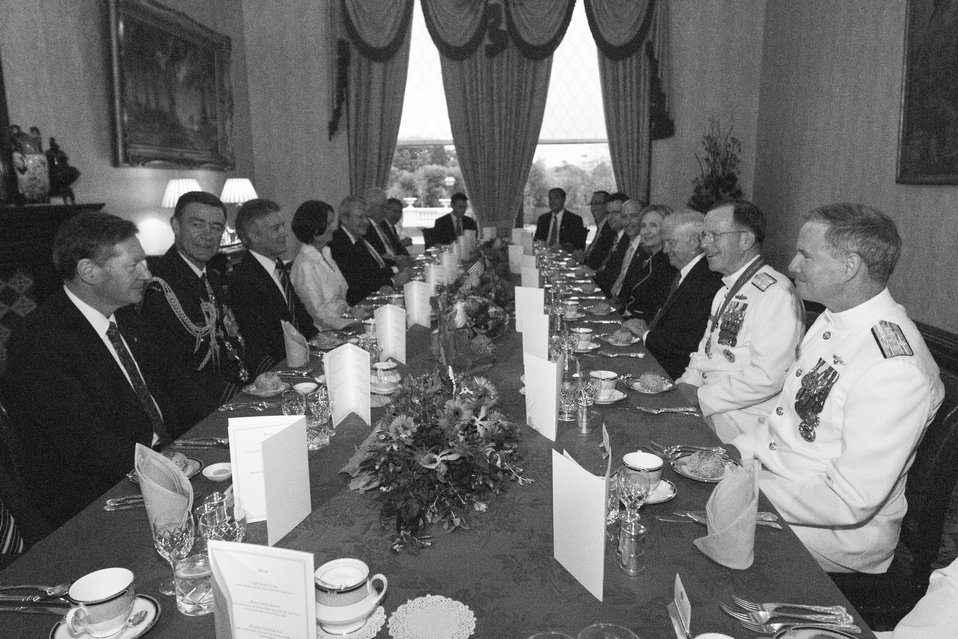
Ambassador Bleich, Secretaries Clinton, Gates; and Admiral Mullen Meet With Their Australian Counterparts

Delegates of the AUSMIN attend a dinner hosted by Australian Prime Minister Julia Gillard in Melbourne, Australia, on November 7, 2010. The following individuals are featured in the photo: on the right, U.S. 17th Chairman of the Joint Chiefs of Staff Admiral Michael Mullen, second from front, U.S. Secretary of Defense Robert Gates, third from front, U.S. Secretary of State Hillary Rodham Clinton, fourth from front, and U.S. Ambassador to Australia Jeff Bleich, fifth from front; on the left, Australian Air Chief Marshal Houston, second from front, Australian Minister of Defense Stephen Smith, third from front, Australian Prime Minister Julia Gillard, fourth from front, Australian Minister of Foreign Affairs Kevin Rudd, fifth from front, and Australian Ambassador to the U.S. Kim Beazley, sixth from front.